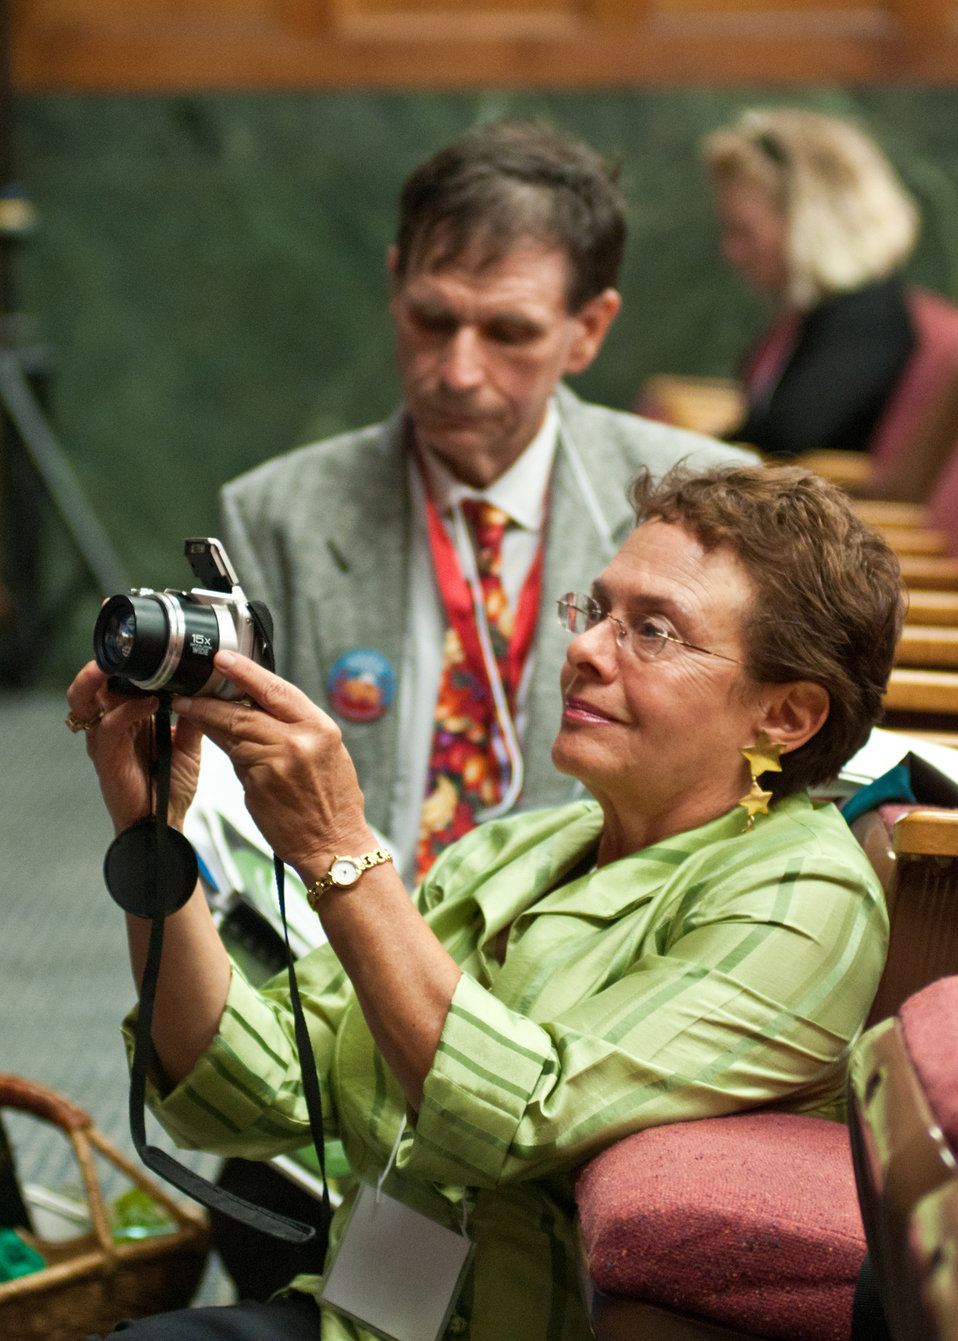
Lurrae Lupone, Madison, CT, photographs stakeholders, members of the public and a panel of USDA officials during the USDA Activities and Priorities Related to Organic Agriculture and Markets Public Listening Session held at the U.S. Department of Agriculture, in Washington DC, Tuesday, September 20, 2011. The purpose of the event was to gain the perspective of stakeholders and members of the public, important tools to help USDA Programs examine and prioritize their activities and objectives in order to best serve the organic community. Behind Lupone is Leslie Goldman the “Enchanted Gardener”, San Diego, CA. a strong verbal advocate of organic agriculture. Lupone is Goldman’s East coast support.